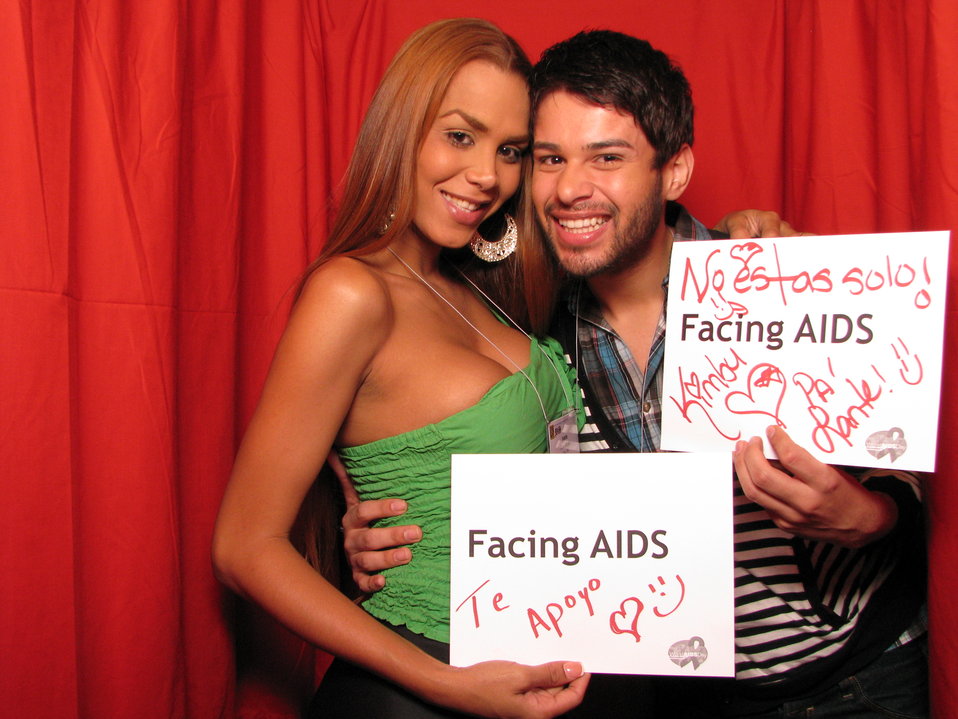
FACING AIDS Te Apoyo (I support you). No estas solo! FACING AIDS. (You are not alone! FACING AIDS).

From the AIDS.gov photo booth at the U.S. Conference on AIDS, September 2010 (Orlando, FL).